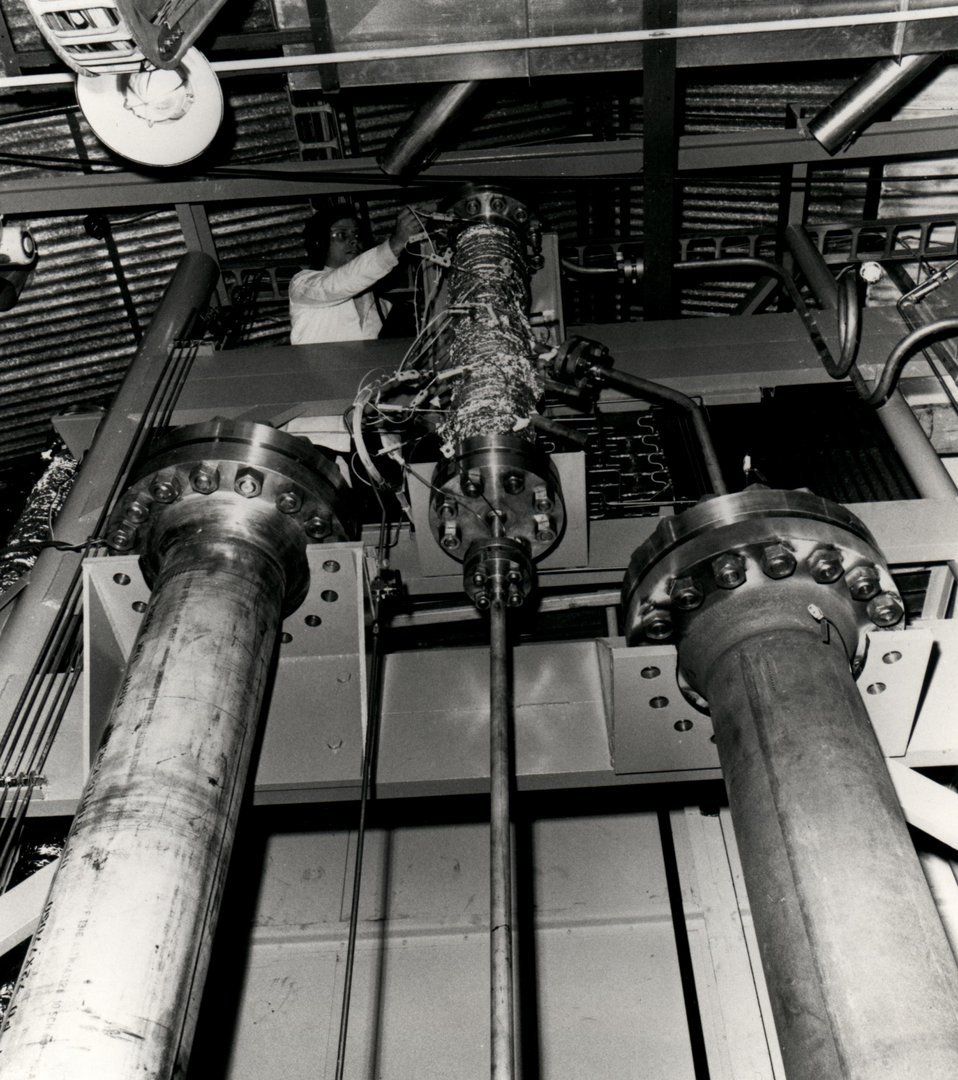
The Energy Research and Development Administration's Oak Ridge National laboratory is involved in both process development and engineering evaluation of several coal-conversion processes for producing synthetic crude oil from coal. Circa 1975.